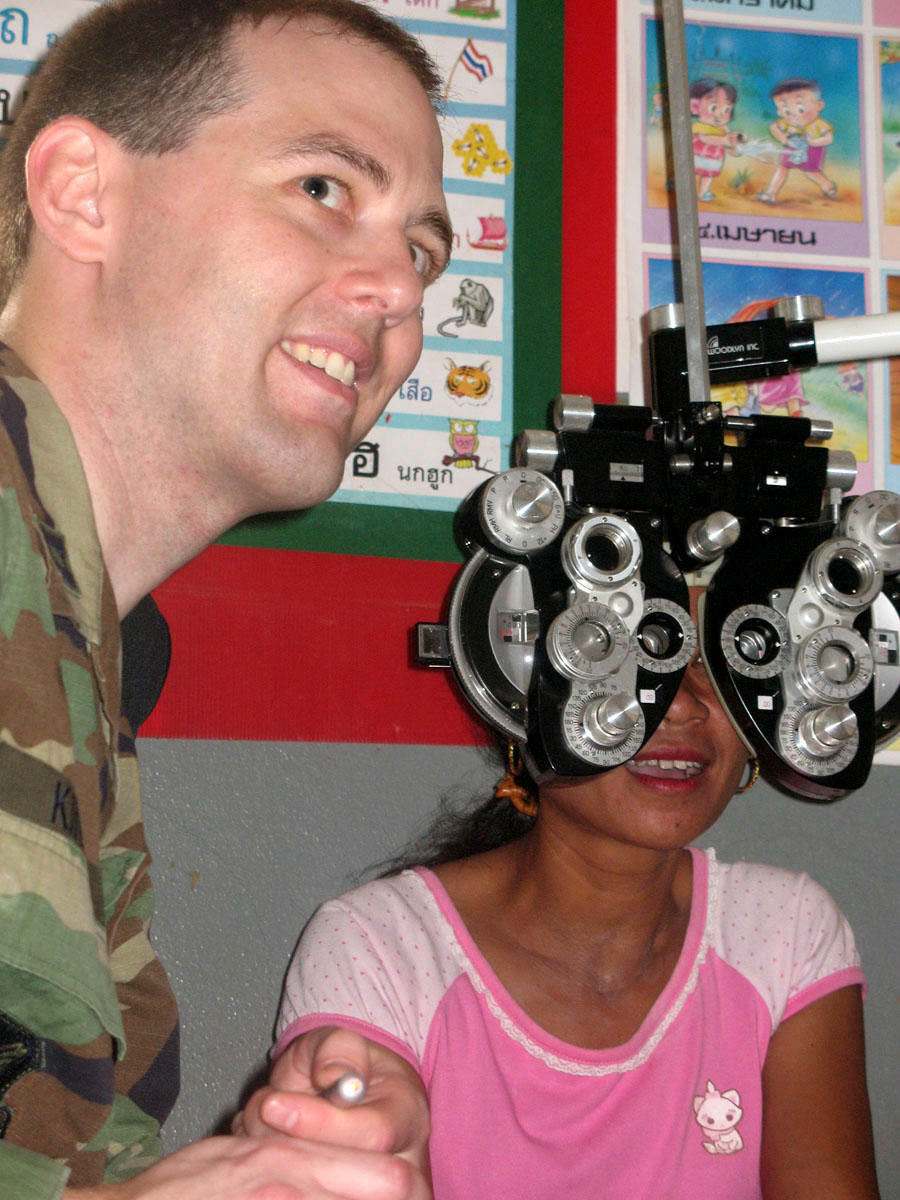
Pacific medical team provides care in Thailand

Capt. Wesley Kinerk treats Sumnieng Jomgaklang Jan. 29 at Ban Don Phawa School in a rural community outside of Korat, Thailand. Captain Kinerk, an optometrist from Misawa Air Base, Japan, is part of a medical team from Pacific Air Forces that's providing dental and medical care to Thais in the rural Korat areas during Exercise Cope Tiger. The exercise is a multilateral joint and combined field training and humanitarian and civic assistance exercise involving Thailand, Singapore and the United States. The Thai-, Singaporean- and U.S.-hosted exercise enhances combined readiness and interoperability, reinforces U.S. commitment to the Southeast Asian region, and demonstrates U.S. capability to project combined and joint forces strategically in a multilateral environment.